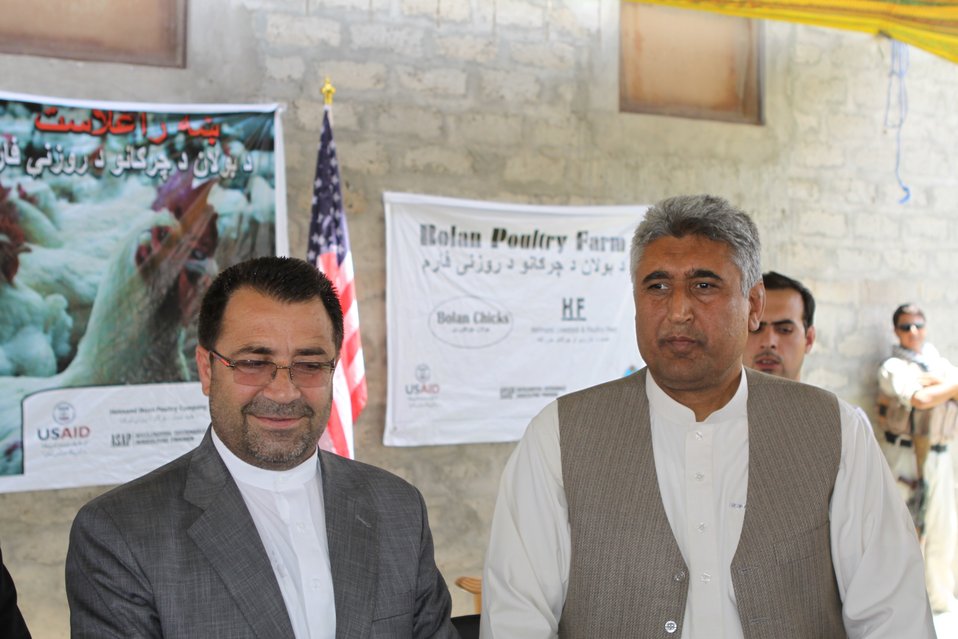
Bolan Poultry Farm